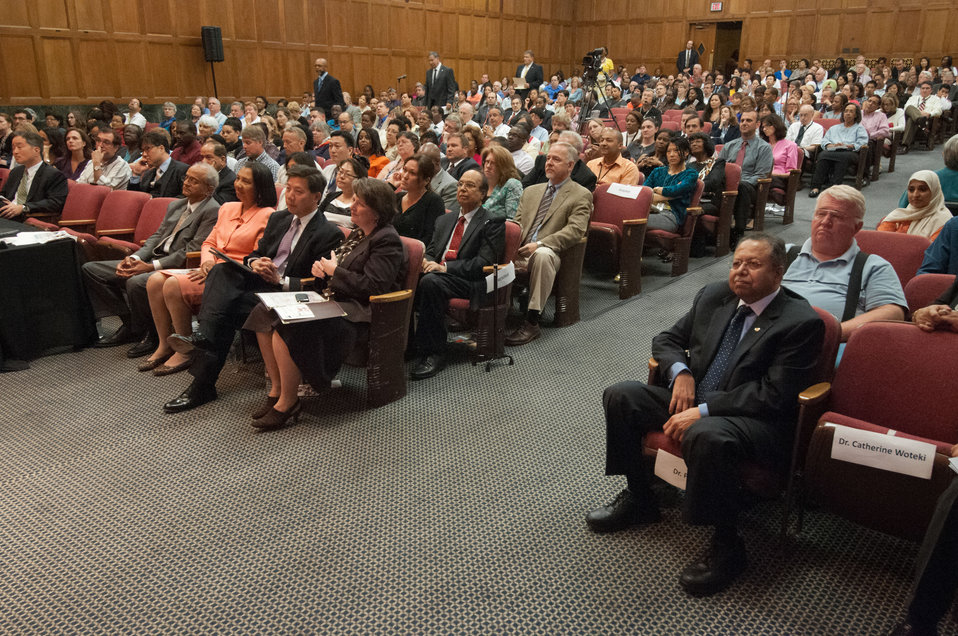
(L to R) Agriculture National Institute of Food and Agriculture Director Dr. Sonny Ramaswamy, Agriculture Associate Assistant Secretary for Administration Dr. Alma Hobbs, Assistant to the President and Cabinet Secretary The White House Chris Lu, Agriculture Deputy Secretary Kathleen Merrigan, Agriculture Food Safety Inspection Service Senior Leader-Chemistry, Toxicology and Related Science Dr. Pat Basu, and the audience watch The Wong People Studio, The Ancient Chinese Dragon Dance Group at the 2012 Asian Pacific American Heritage Observance “Striving for Excellence in Leadership, Diversity and Inclusion” at the U.S. Department of Agriculture in Washington, D.C. on Thursday, May 24, 2012.